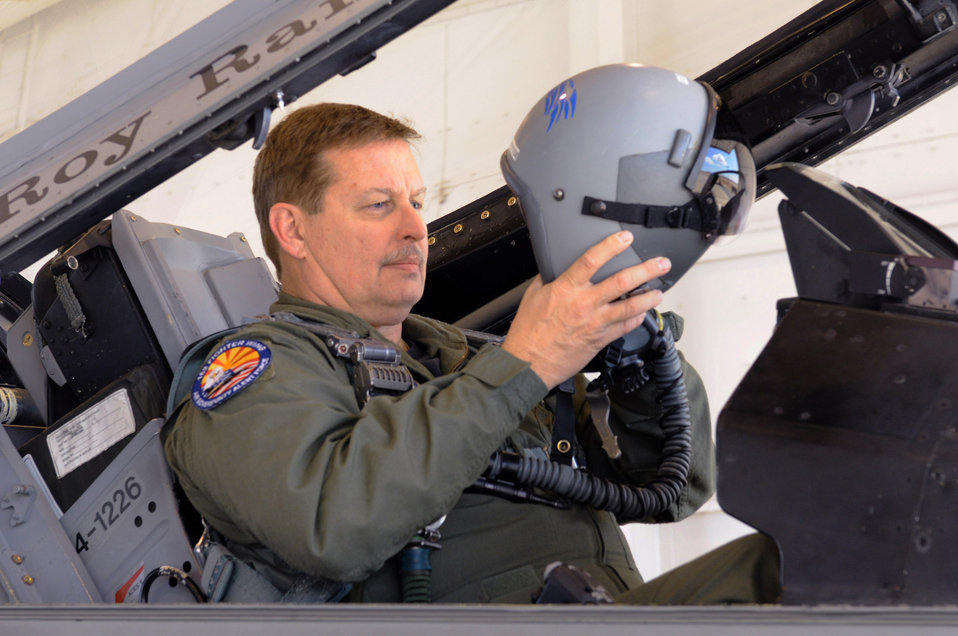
Phase inspectors

Senior Airman Jamie Jackson removes a formation light from an A-10 Thunderbolt II during a phase inspection Feb. 22, 2011, at Kandahar Airfield, Afghanistan. The 451st Expeditionary Maintenance Squadron conducts a phase inspection every 500 flight hours. Airman Jackson is an aircraft structural maintenance journeyman assigned to the 451st EMXS.